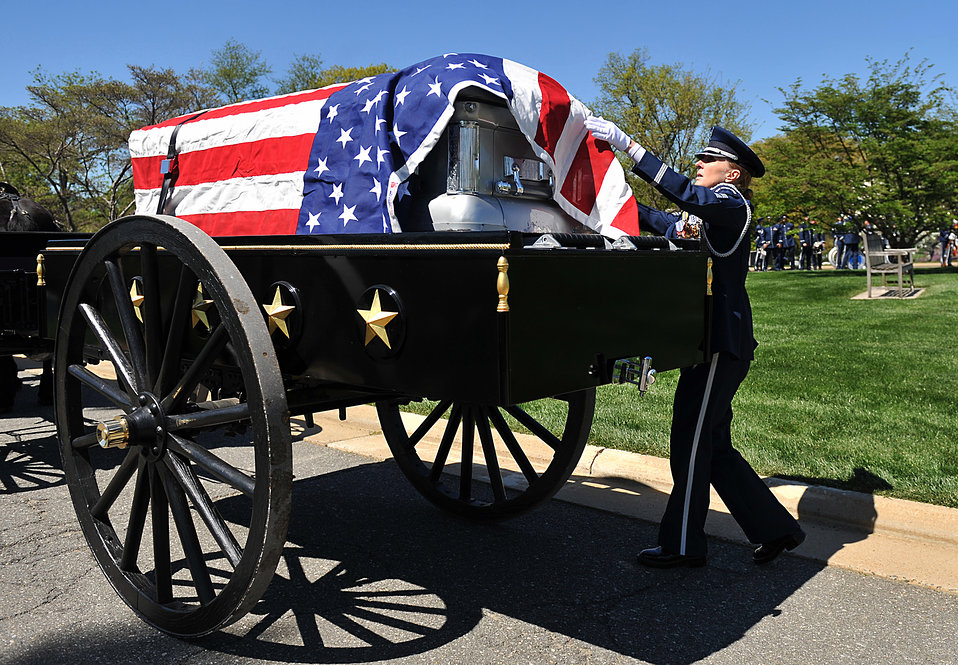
Dignified Transfer

Chief Master Sgt. Diane Munson straightens an American flag on a casket that will contain the remains of Tech. Sgt. Allen J. Avery during Avery's burial ceremony at Arlington National Cemetery, Va., April 6, 2012. Avery was part of a combat search and rescue mission aboard an HH-53C Super Jolly Green Giant helicopter when they were shot down over Quang Tri province, South Vietnam, April 6, 1972. Munson is with the U.S. Air Force Honor Guard.